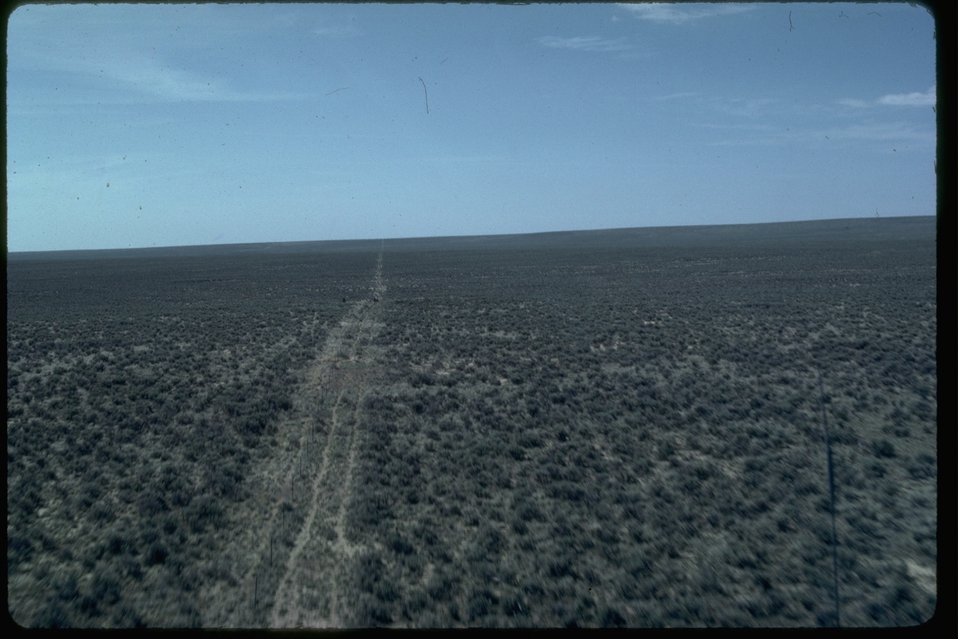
The Idaho/Oregon State line looking south at all of the sagebrush of the Lookout Butte Wilderness Study Area. OR 3-194.